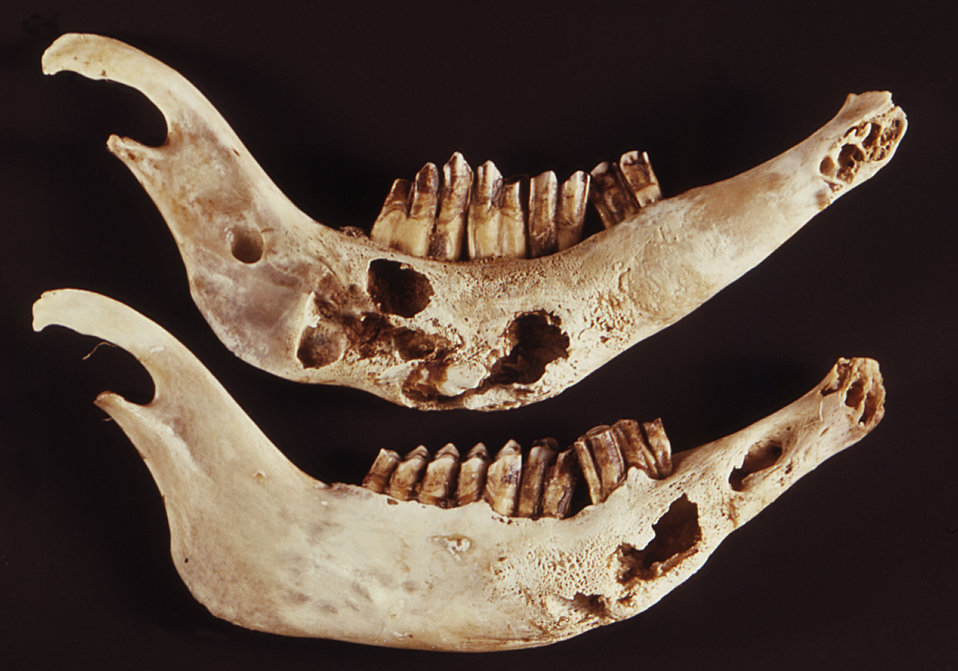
This 1972 photograph revealed the gross pathologic appearance of a wild Dall sheep's, Ovis dalli mandible that was suspected of sustaining the raveges of actinomycosis. Note the erosive spread of the mandibular lesions due to this long-standing, chronic granulomatous inflammatory process. See PHIL 10800, 10801, 10802, and 10803, for photomicrographs, which reveal the histopathologic details of these lesions. Various staining techniques were implemented during the investigative process while performing a differential diagnosis on this sheep.